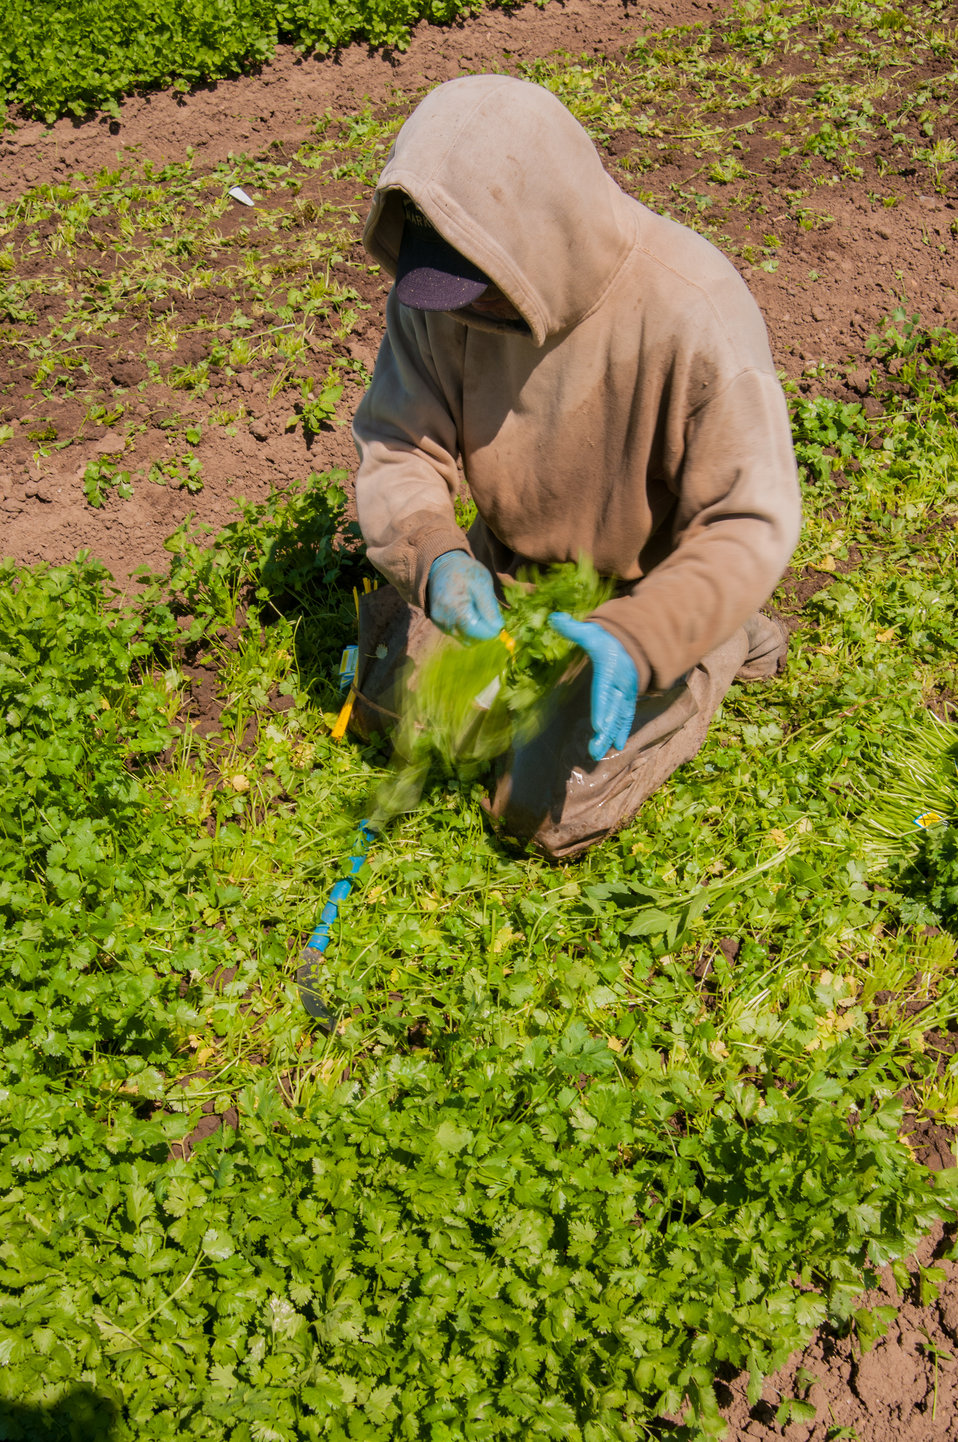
Migrant workers harvest Cilantro at Lakeside Organic Gardens in Watsonville, CA on Tuesday, Aug. 27, 2013.